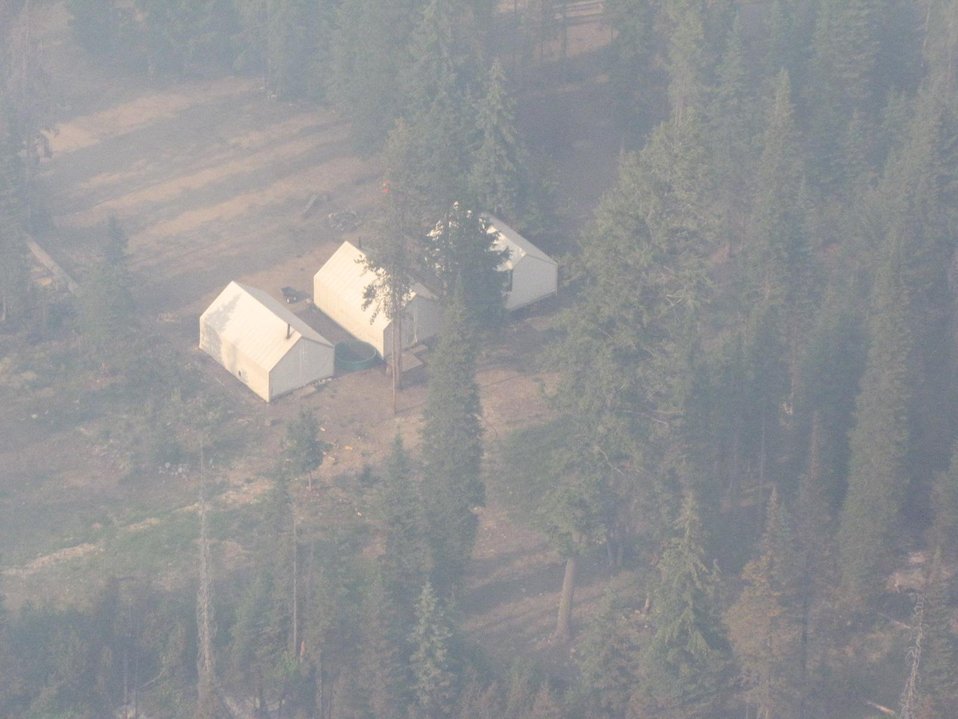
The Incident Command Post (ICP) is visible through the smoke from the Gold Pan Fire in the Bitterroot National Forest. The Gold Pan Fire in the Bitterroot National Forest near Conner, MT began by lightning on Jul. 16, 2013 by lighting have consumed approximately 16,330 acres.